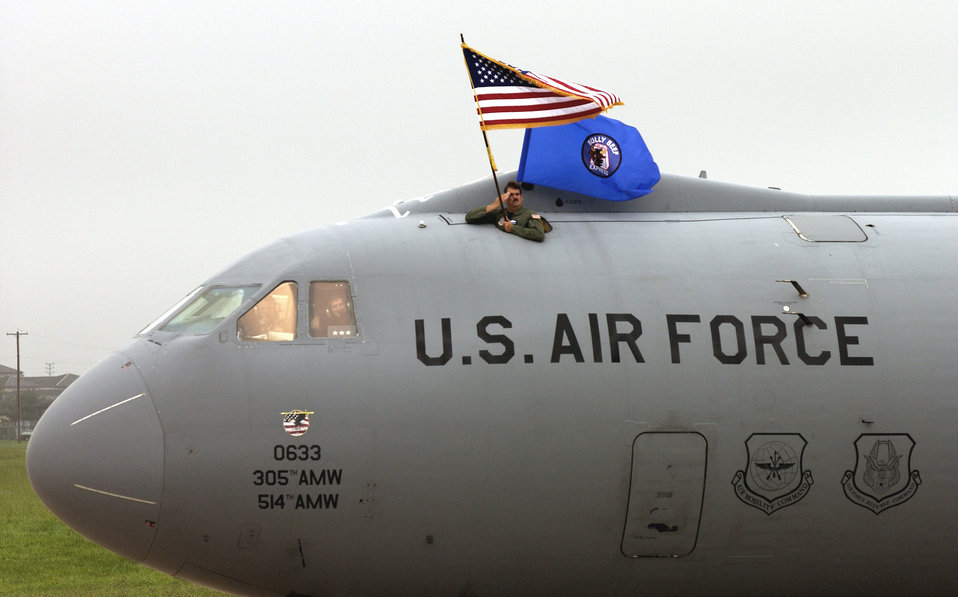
Last active-duty C-141B Starlifter makes final flight

MCGUIRE AIR FORCE BASE, N.J. -- Senior Master Sgt. Thomas Kenny displays the American and 6th Airlift Squadron flags aboard the final C-141B Starlifter to leave here Sept. 16. The C-141 is heading to permanent storage at Davis-Monthan Air Force Base, Ariz. Sergeant Kenny is assigned to the 6th AS.